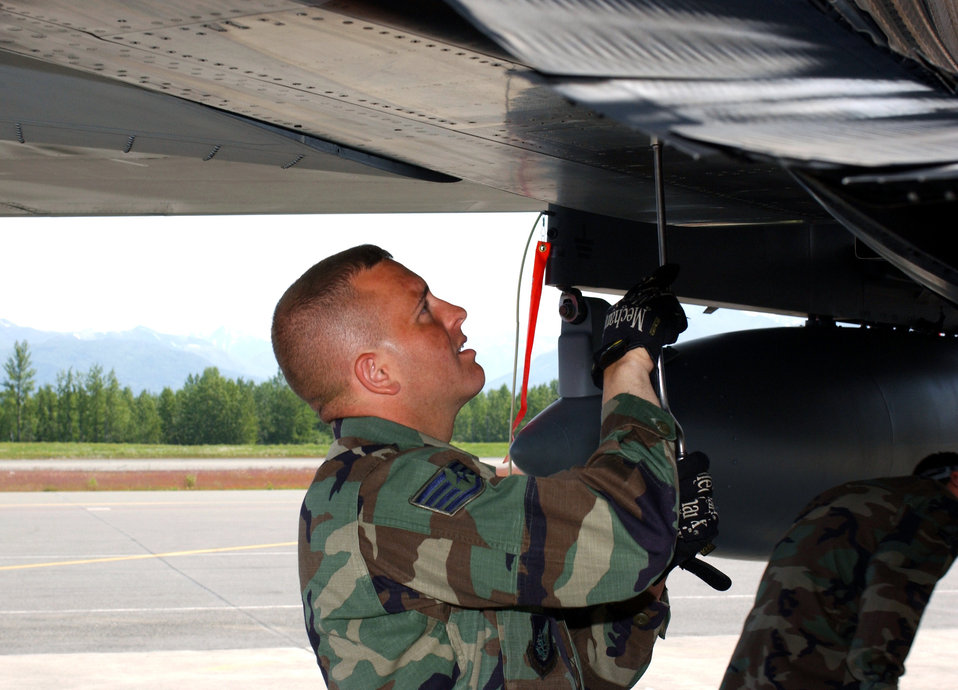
Eagle keeper

ELMENDORF AIR FORCE BASE, Alaska (AFPN) -- Staff Sgt. Michael Pilling tightens bolts on a 19th Fighter Squadron F-15 Eagle after a Cooperative Cope Thunder flight. Pilling is a crew chief assigned to the 3rd Aircraft Maintenance Squadron here. The 19th FS pilots fly offensive counter-air missions during the Pacific Air Forces-sponsored air combat training exercise which runs through June 20.